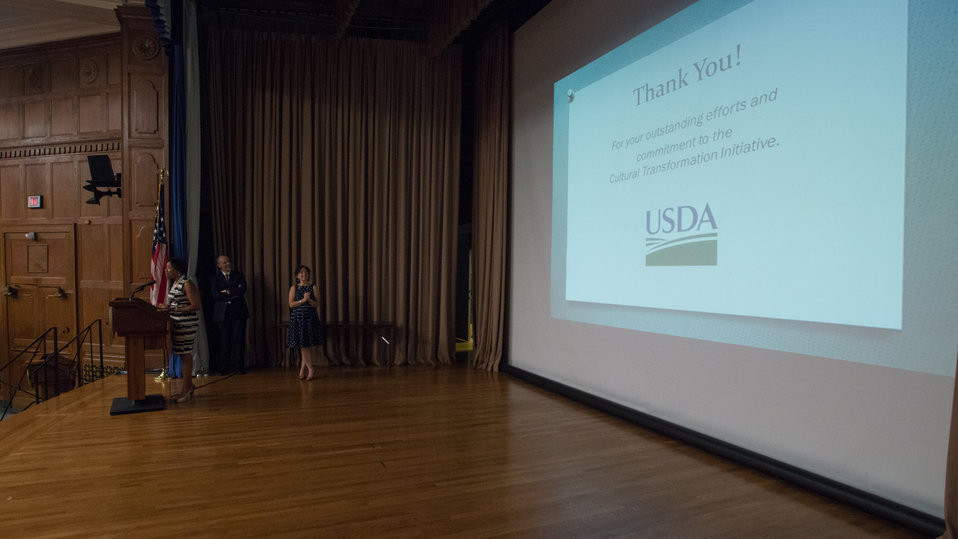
Cynthia Gibbs leads the forum on Intergenerational Communication during the U.S. Department of Agriculture’s (USDA) Rural Development (RD) 2nd Annual Cultural Transformation kickoff opening ceremony and forums, themed “Employees Influencing Change,” on Tuesday, Aug. 13, 2013 USDA in Washington, D.C.